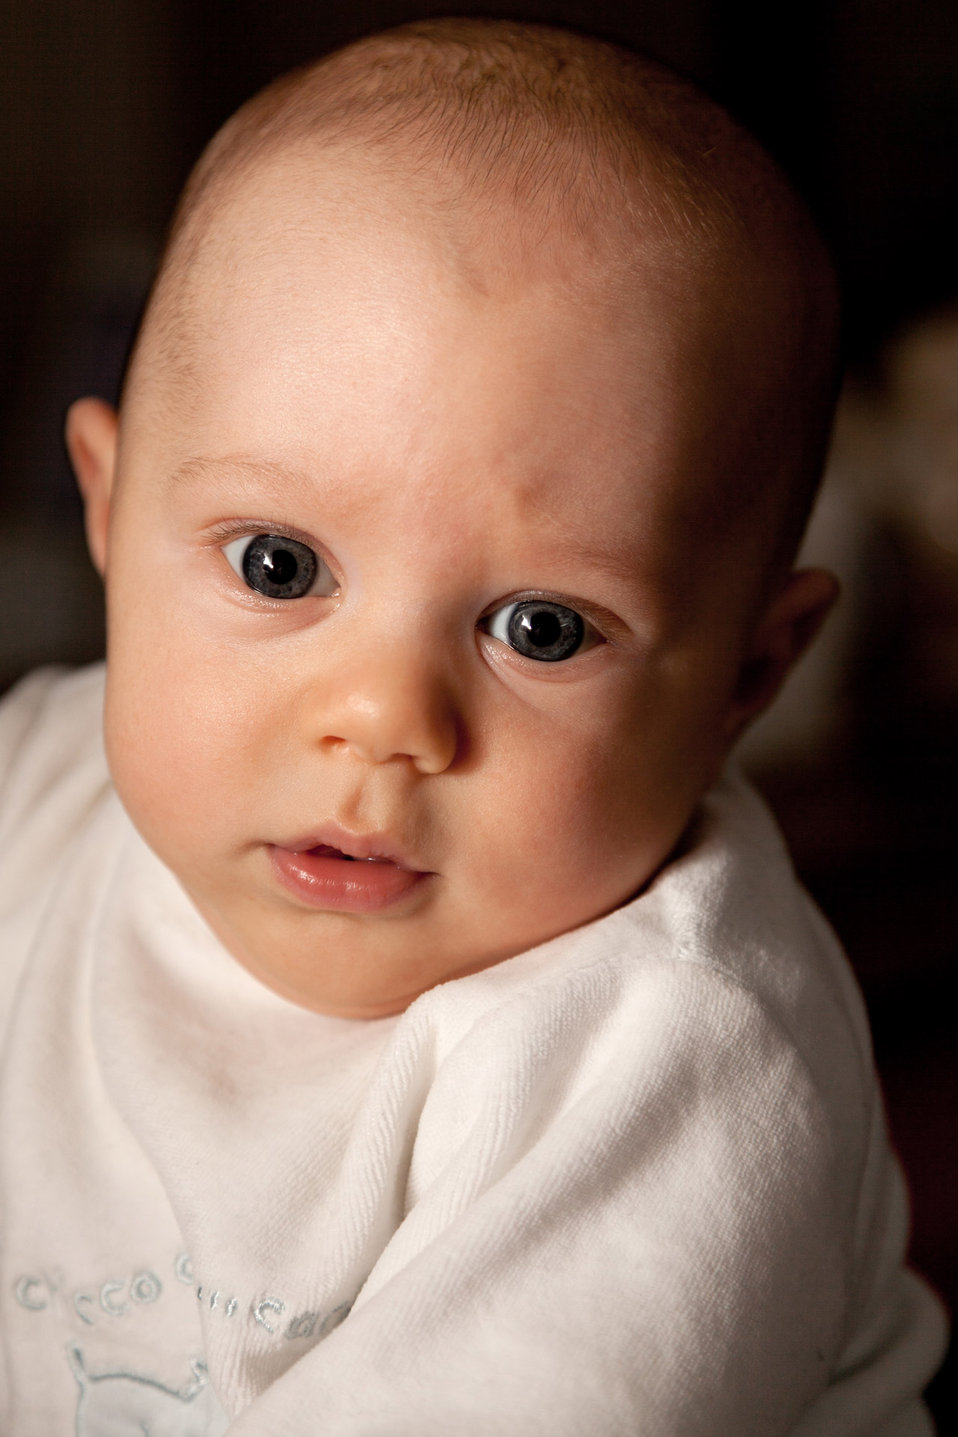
Baby portrait

Portrait of a couple of months old baby boy.